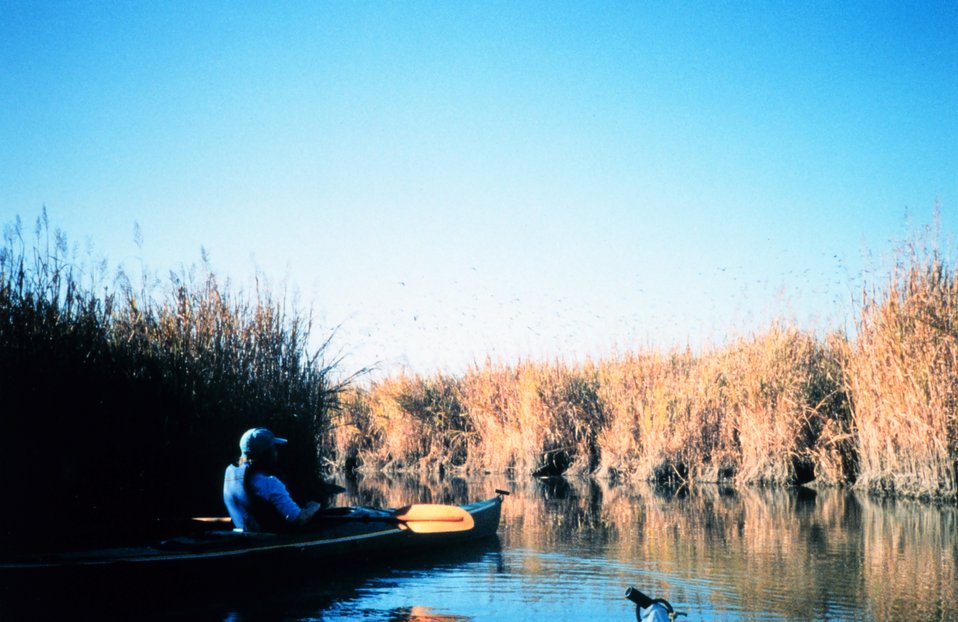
Kayaker observing the marsh flora and fauna on a fall afternoon. A huge flock of redwing blackbirds rising from the marsh over the marsh grass.